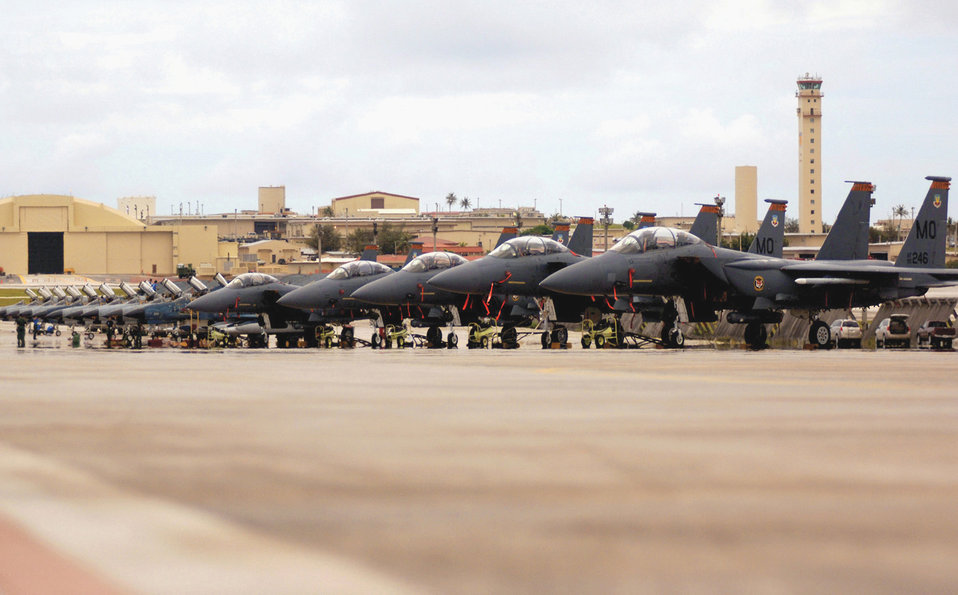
Cope North bilateral exercise wraps up in Guam

ANDERSEN AIR FORCE BASE, Guam -- U.S. Air Force F-15E Strike Eagles and Japanese F-4EJ Kais sit on the parking ramp, ready for an exercise mission during Cope North, which ended July 21.